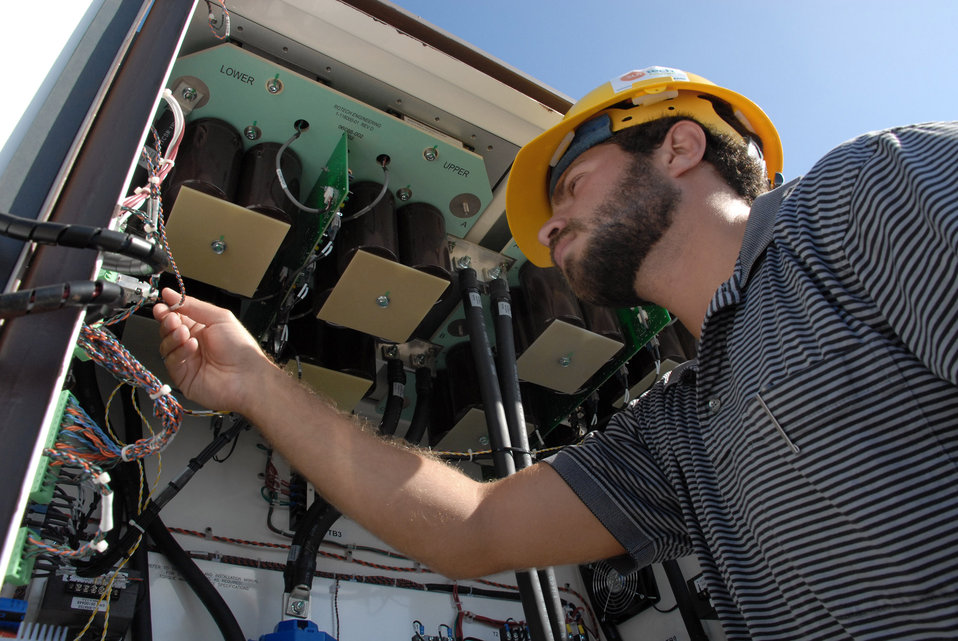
Air Force solar-powered hydrogen plant completed

Nolie Diakoulas performs a final inspection on the hydrogen plant's inverter box before it goes into operation May 22 at Hickam Air Force Base, Hawaii. This box converts DC power to AC (usable) power, which runs the base hydrogen station.